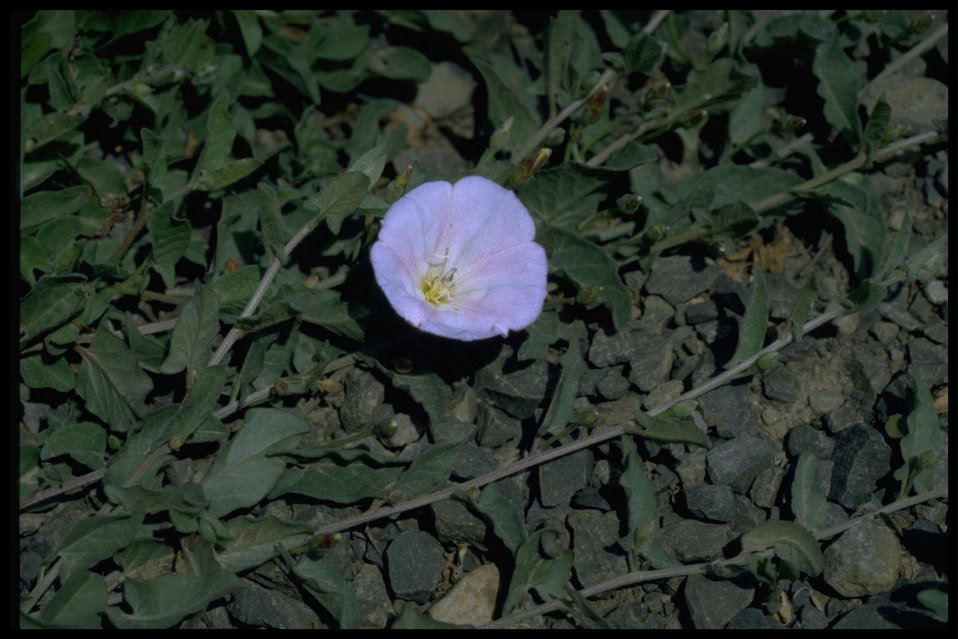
Medium shot of Common Bindweed on roadside.